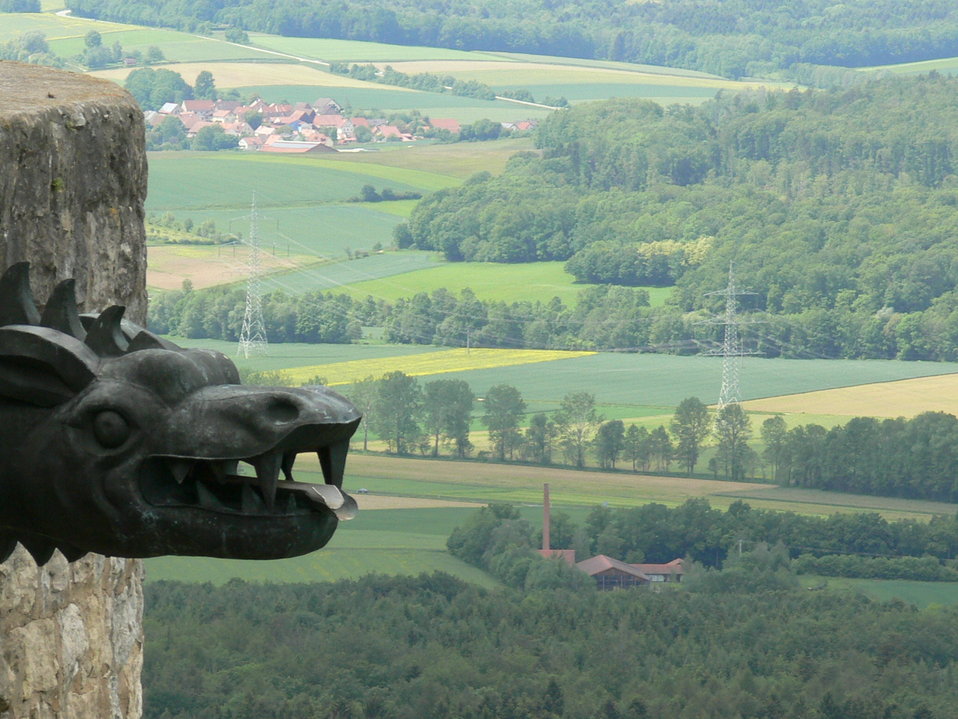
039 Alte Ziegelei, Giechburg-Wasserspeier 2006-06-04